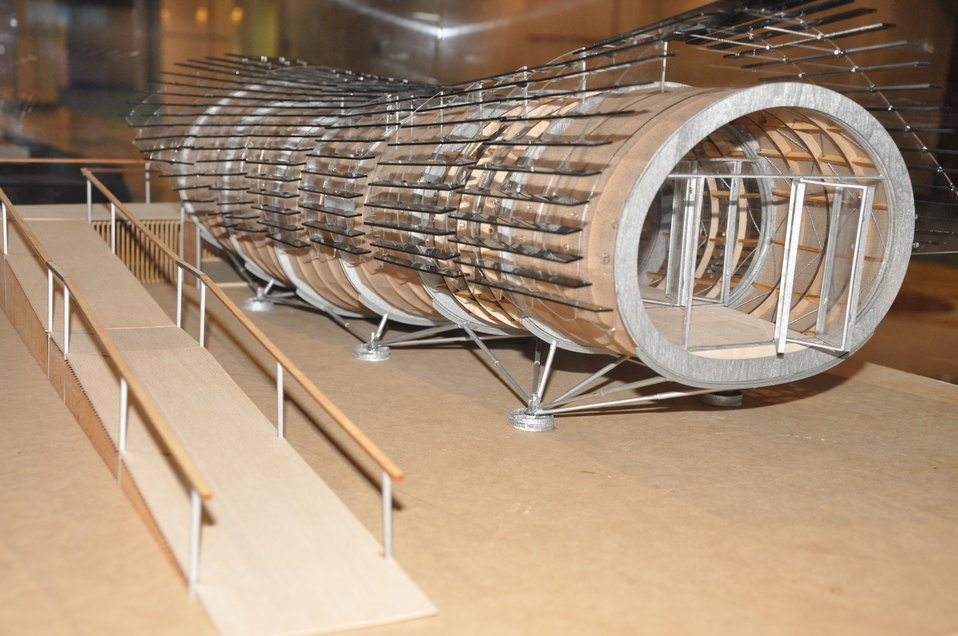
University of Hawaii